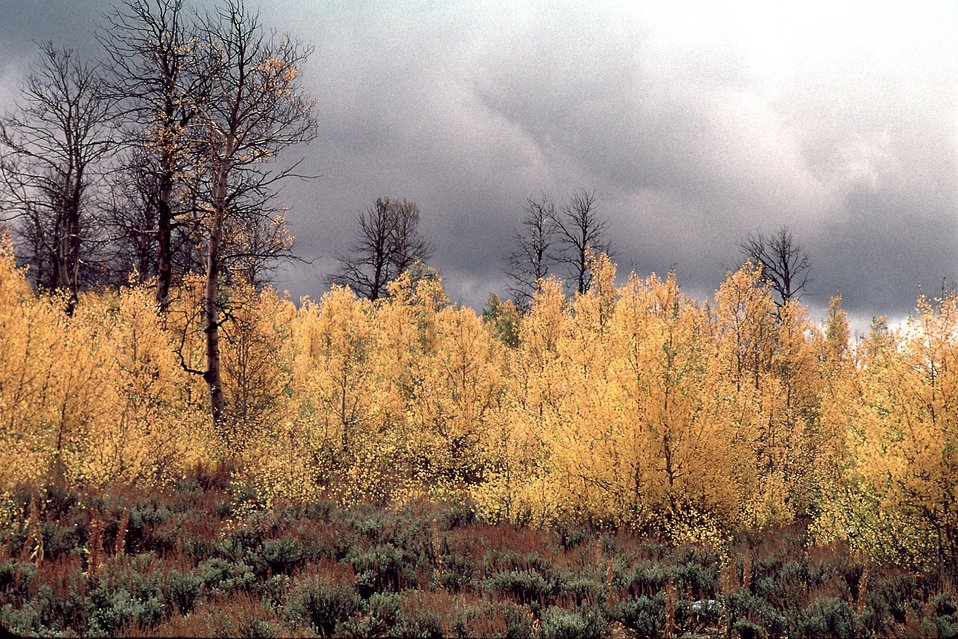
Aspens at Fish Lake, Steen's Mountain.